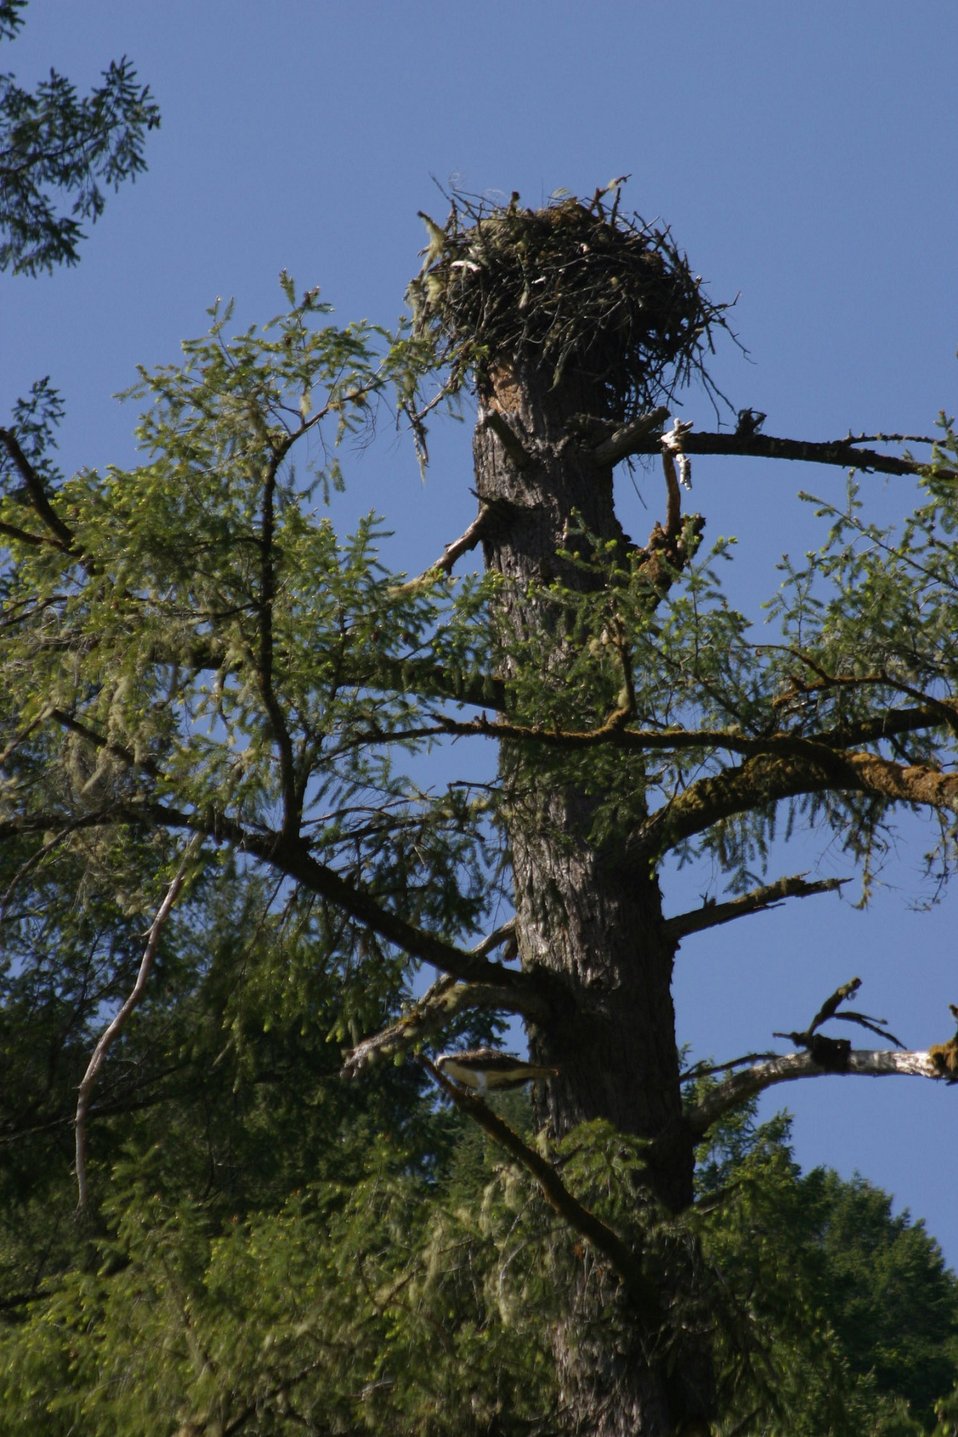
Wild section of the Rogue River from Grave Creek to Foster Bar May 19 to May 22.